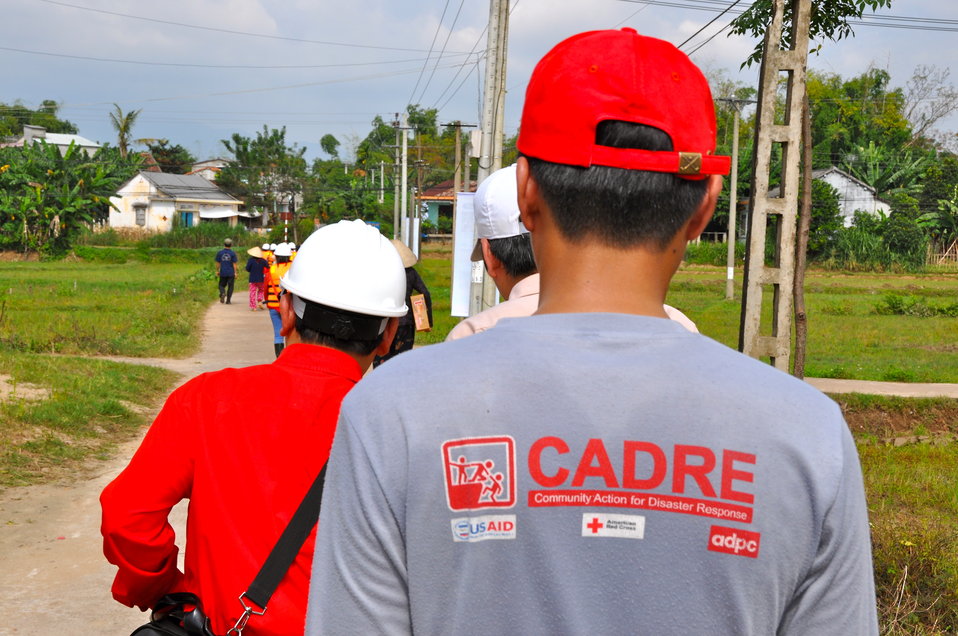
USAID, Red Cross Support Disaster Response Drill in Duy Hoa Commune, Quang Nam Province

Duy Hoa Commune, Quang Nam Province
December 5, 2012